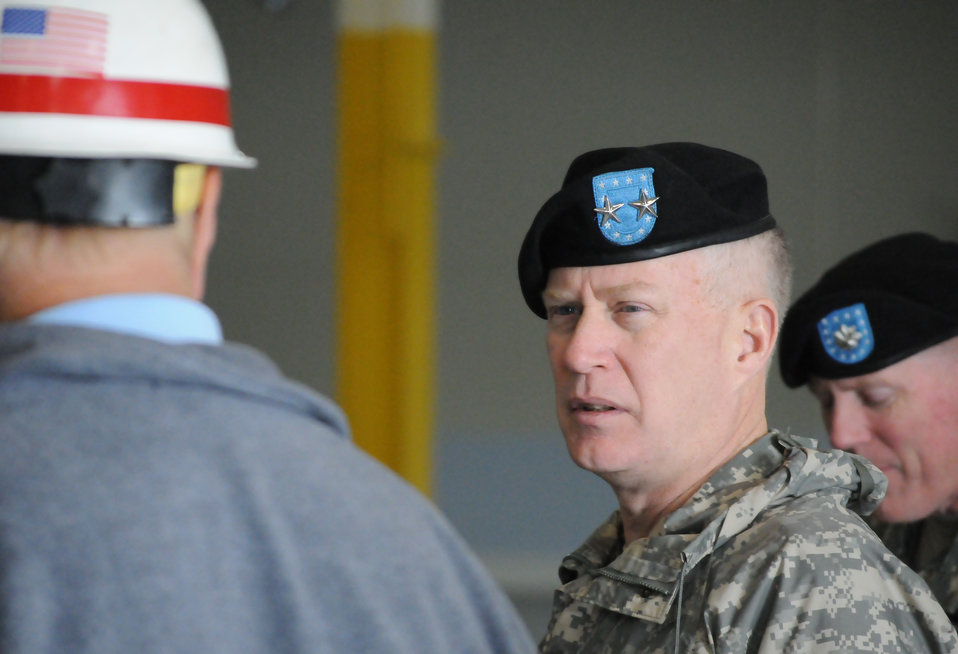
Maj. Gen. Jeffrey J. Dorko, the Deputy Commanding General for Military and International Operations for the U.S. Army Corps of Engineers, receives a briefing about the Sacramento District’s current military construction projects during a visit to Tracy Army Depot, one of three sites that make up the Defense Distribution Depot San Joaquin.